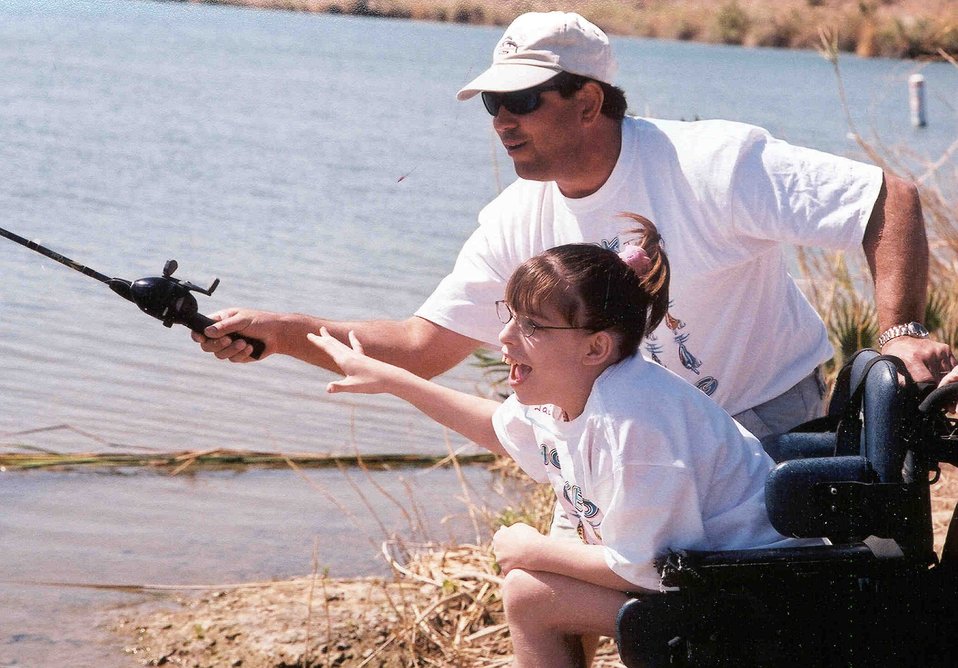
Mentally and physically challenged young people enjoying fishing and boating in celebration of National Fishing and Boating Week.